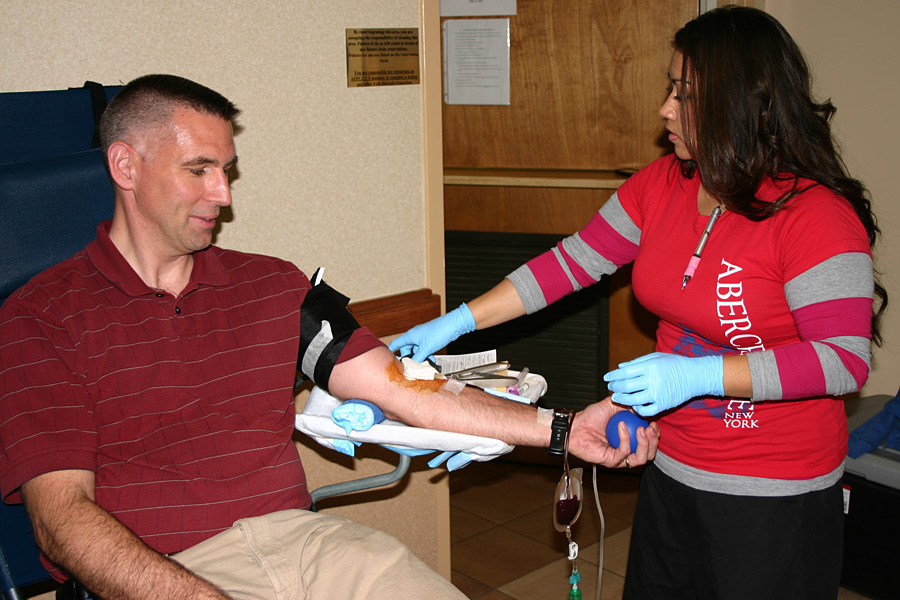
AFPC hosts blood drive to support warfighters

Phlebotomist Roxie Torres draws blood from Bob Landis, Air Force Personnel Center directorate of civilian force integration communications, during a blood drive April 17 at AFPC, Randolph Air Force Base, Texas. AFPC members gave more than 40 pints of blood that will be used to supply life-saving blood products to warfighters in Operation Iraqi Freedom and Operation Enduring Freedom. Ms. Torres is from the Blood Donor Center at nearby Lackland AFB, Texas